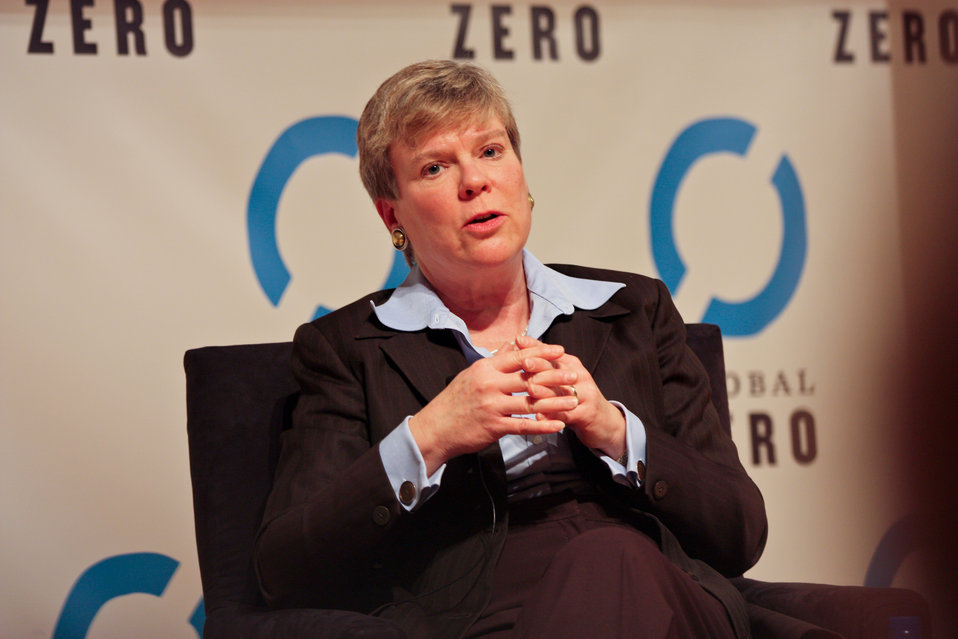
Acting Under Secretary Gottemoeller Delivers Remarks at the Global Zero Conference

Acting Under Secretary for Arms Control and International Security Rose Gottemoeller delivers remarks at the Global Zero Conference at Yale University on 'Arms Control in the Information Age: The 'Getting to Zero' Toolbox' in New Haven, Connecticut on February 18, 2012.